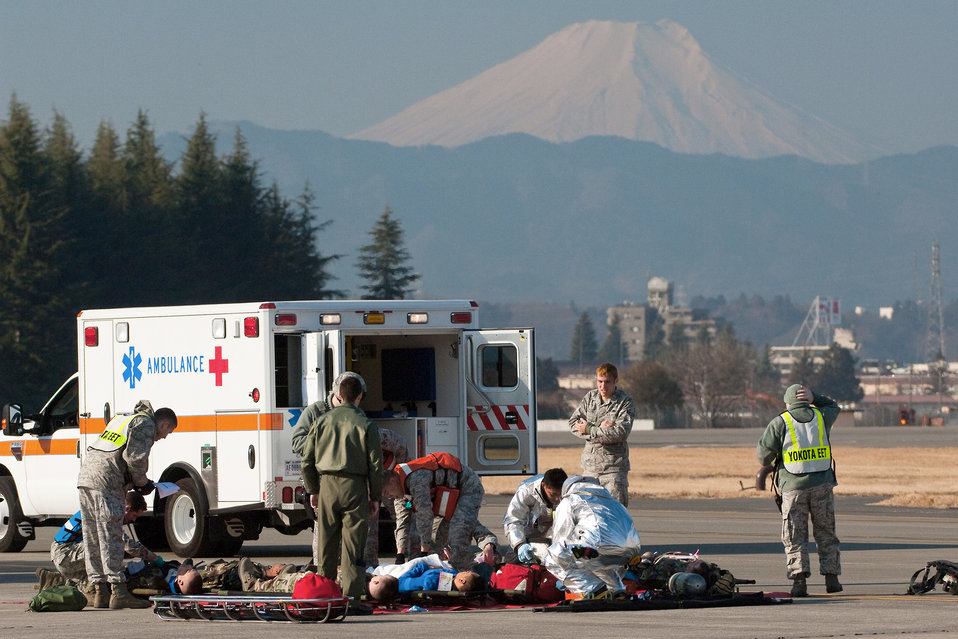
Emergency management exercise

Firefighters from the 374th Civil Engineer Squadron and members of the 374th Medical Operations Squadron perform triage during an emergency management exercise Feb. 4, 2011, at Yokota Air Base, Japan.